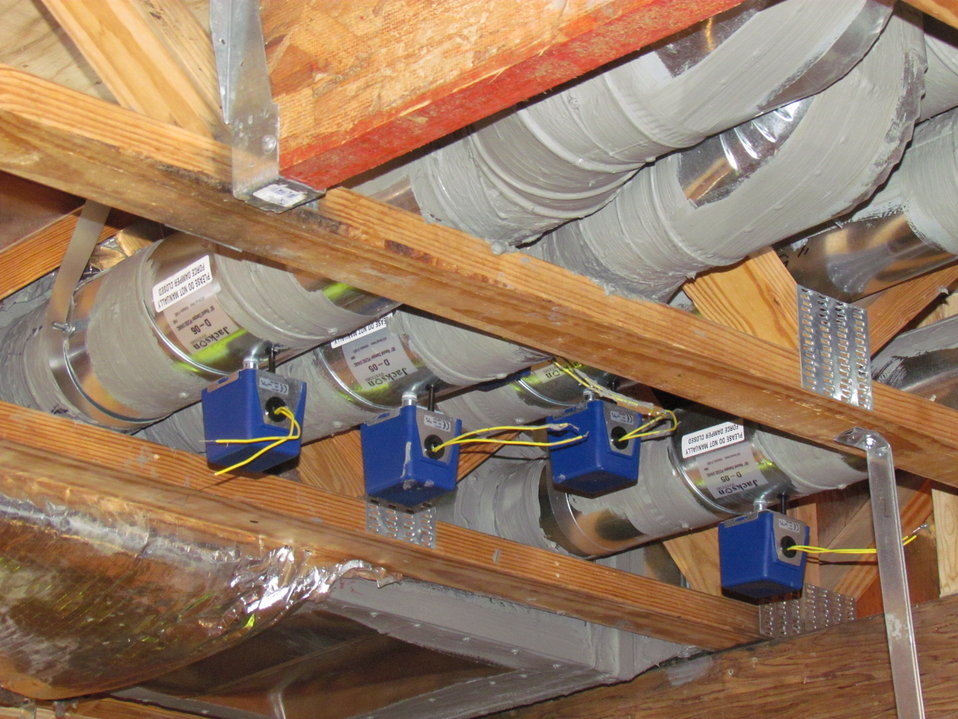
Net-Zero Energy Residential Test Facility – Photo taken looking up into basement ceiling showing motorized duct dampers and associated ductwork.